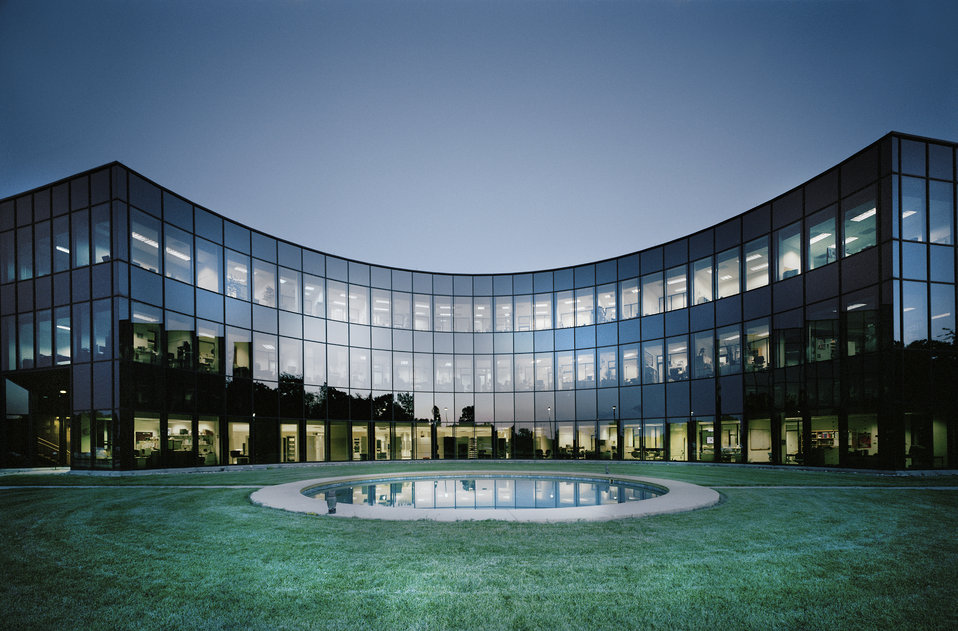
FERMI NATIONAL ACCELERATOR LABORATORY'S FEYMAN COMPUTING CENTER.